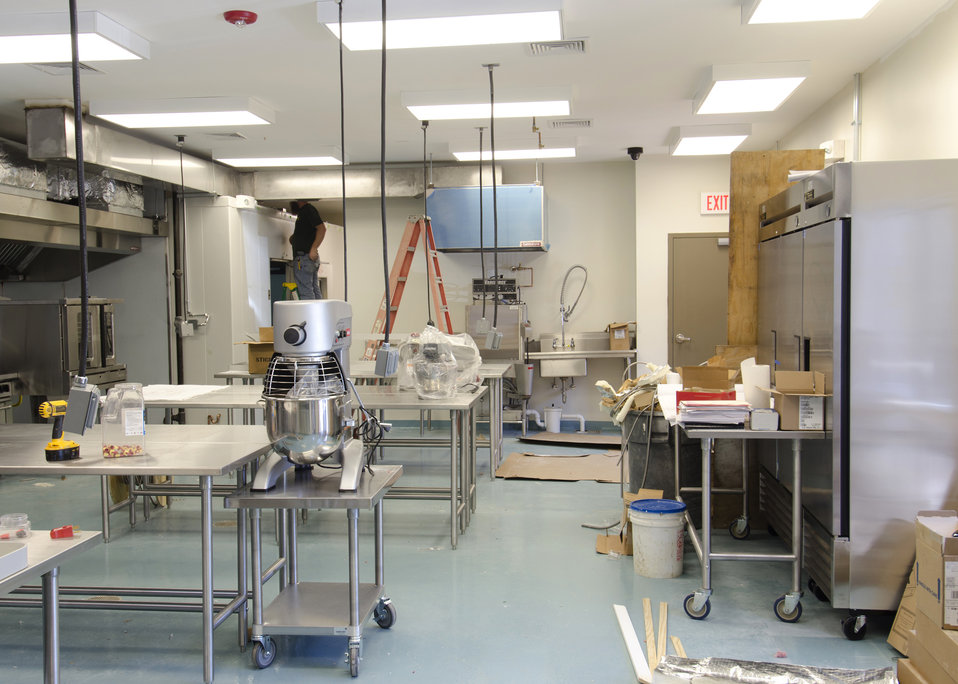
YorKitchen is a shared incubator kitchen that received partial funding through the U. S. Department of Agriculture’s (USDA) Rural Development (RD) Rural Business Enterprise Grant (RBEG) program. This program provides grants for rural projects that finance and facilitate development of small and emerging rural businesses, distance- learning networks, and employment related adult education programs. YorKitchen is a commercially equipped and fully licensed kitchen in which new entrepreneurs can prepare new products without the associated start up costs. This “incubator kitchen” provides full business support to include invoicing, accounting, advertising, outreach, and marketing for entrepreneurs. The YorKitchen is housed in the annex of Central Market in York, PA. This location offers local agricultural producers increased opportunities to develop new value-added products with their produce.